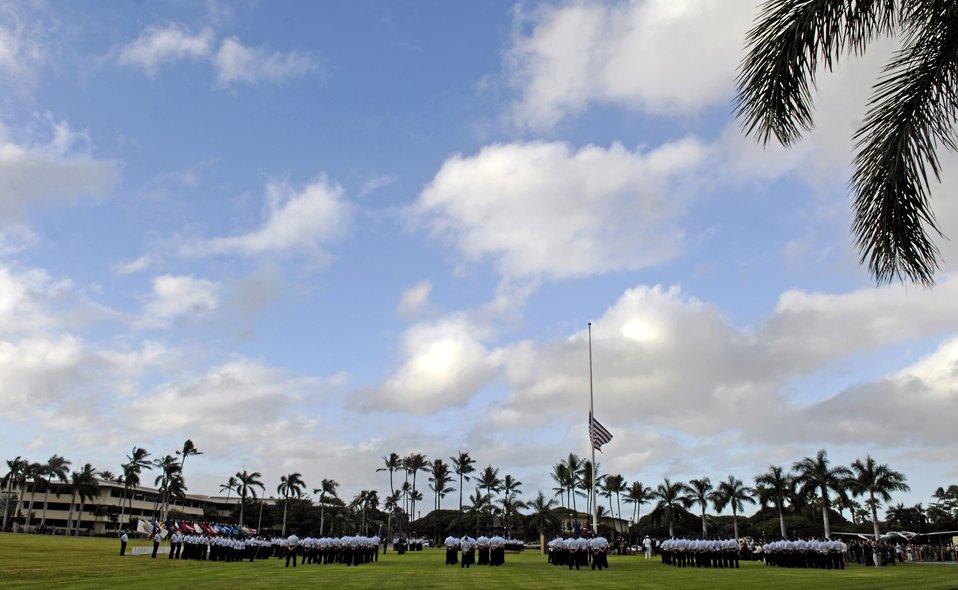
Remembering the Pearl Harbor attack

A ceremony at the Hickam Air Force Base, Hawaii, flagpole was held Dec. 7 to honor the 189 who died and 303 who were wounded during a surprise attack by Japanese fighter aircraft 65 years ago. The consolidated barracks, what is now the Pacific Air Forces headquarters, was reportedly the most bombed building on Oahu.